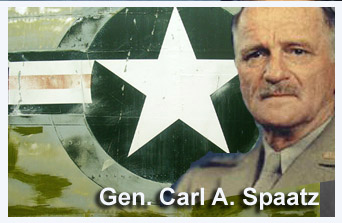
Gen. Carl A. Spaatz

Gen. Carl Andrew Spaatz was selected the first Chief of Staff of the Army Air Forces. He was also the first chief of staff of the independent Air Force and a main developer of tactical air doctrine.